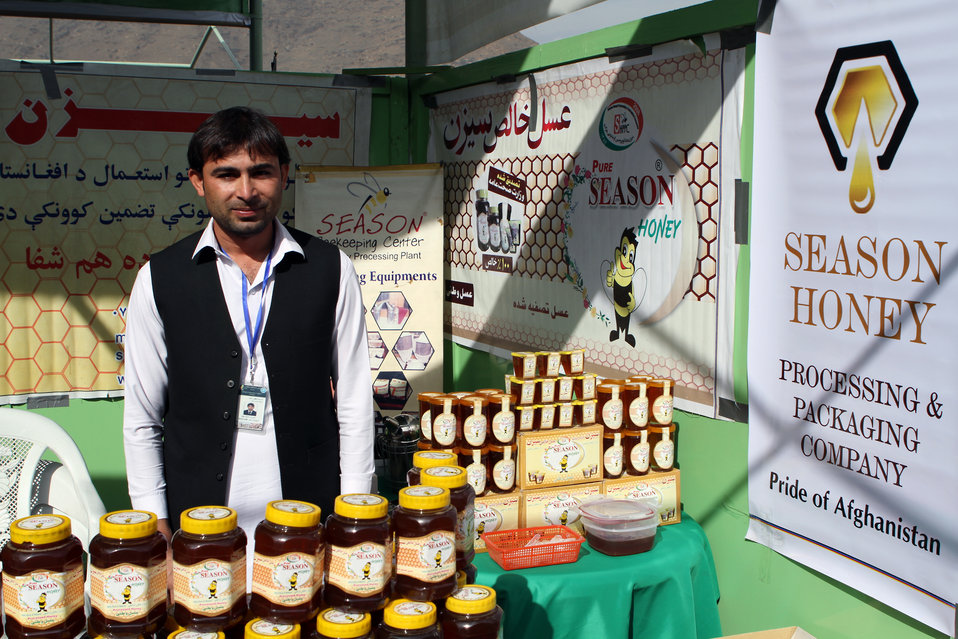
Agfair event